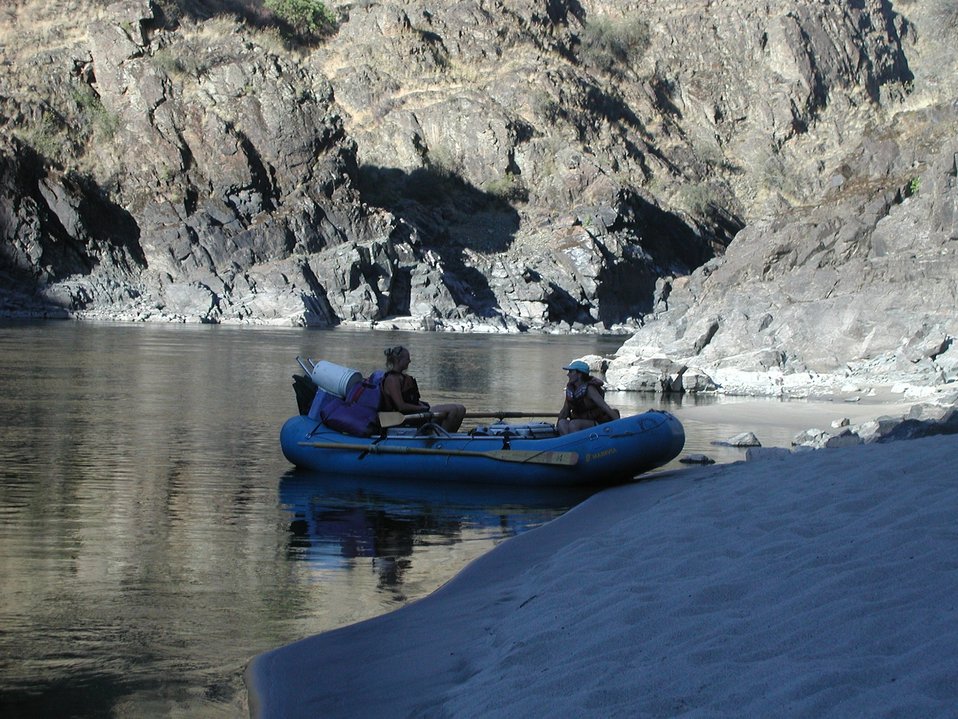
Recreation Rafting on Lower Salmon River Cottonwood Field Office UCSC Upper Columbia Salmon Clearwater District